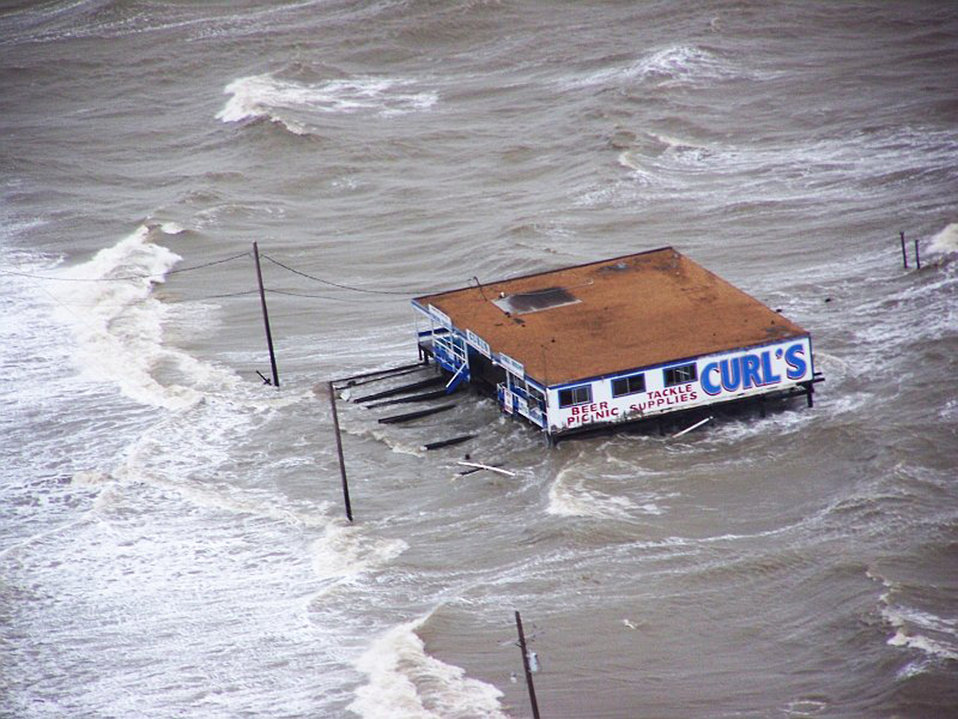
JTF-129 Airmen rescue civilians stranded in Galveston

Joint Task Force-129 crew, Jolly 92, flies over the storm surge that overtook the Bolivar Peninsula bridge near Galveston, Texas, Sept. 12. The California Air National Guard crew of Jolly 92 rescued six civilians and pets stranded in Galveston.